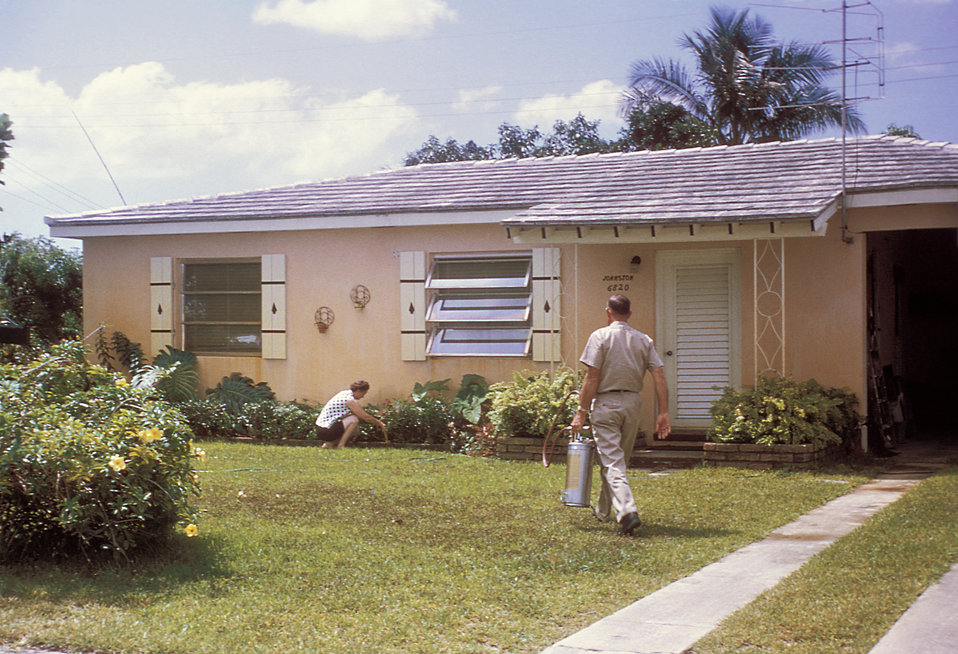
This photograph was taken during the 1965 Aedes Aegypti eradication program in Miami, Florida.